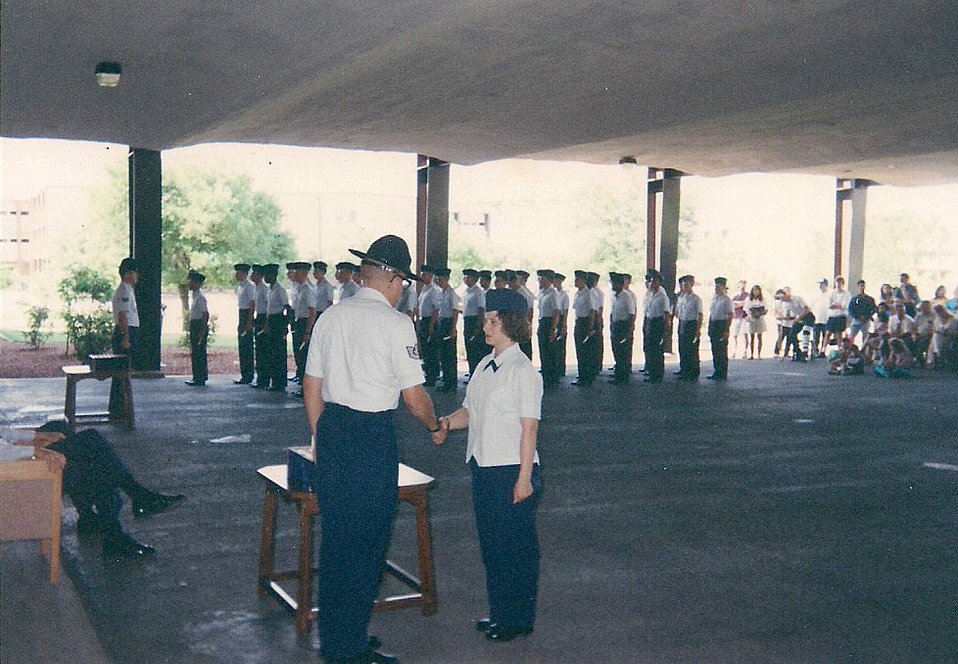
Wenonah Dodd -- Alaska Region

Wenonah Dodd, a Law Enforcement Support Assistant in Anchorage, graduated Air Force basic training at Lackland AFB, Texas, in 1993.